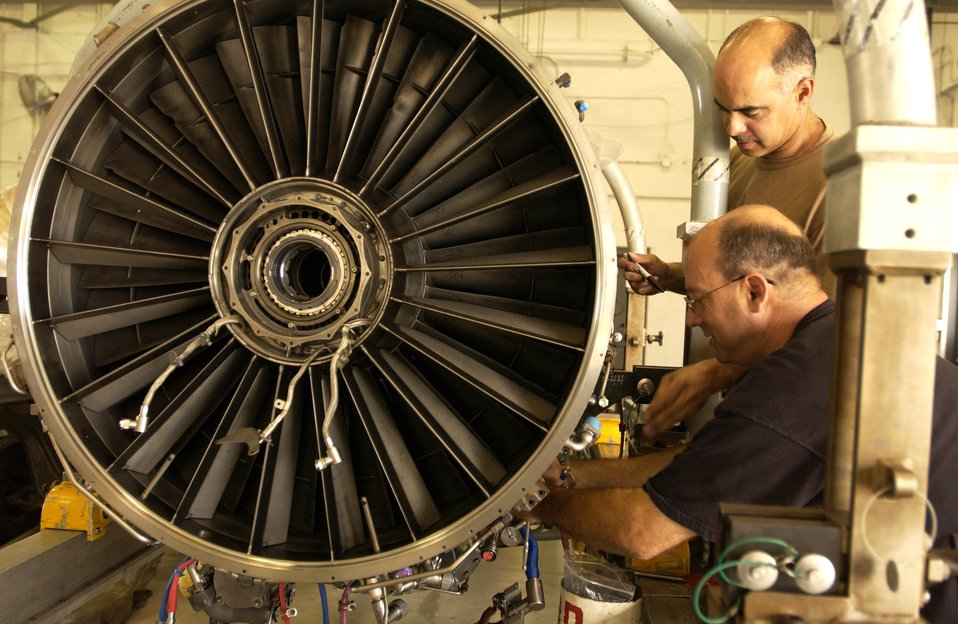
Repairing a FOD-damaged engine

Tech. Sgt. Darren Small (front) and Staff Sgt. Edwin Quinones repair an F-15 Eagle engine on May 10, 2006 that was damaged by foreign object debris, known as FOD. Sergeants Small and Quinones are aerospace propulsion technicians at the Florida Air National Guard's 125th Fighter Wing in Jacksonville.